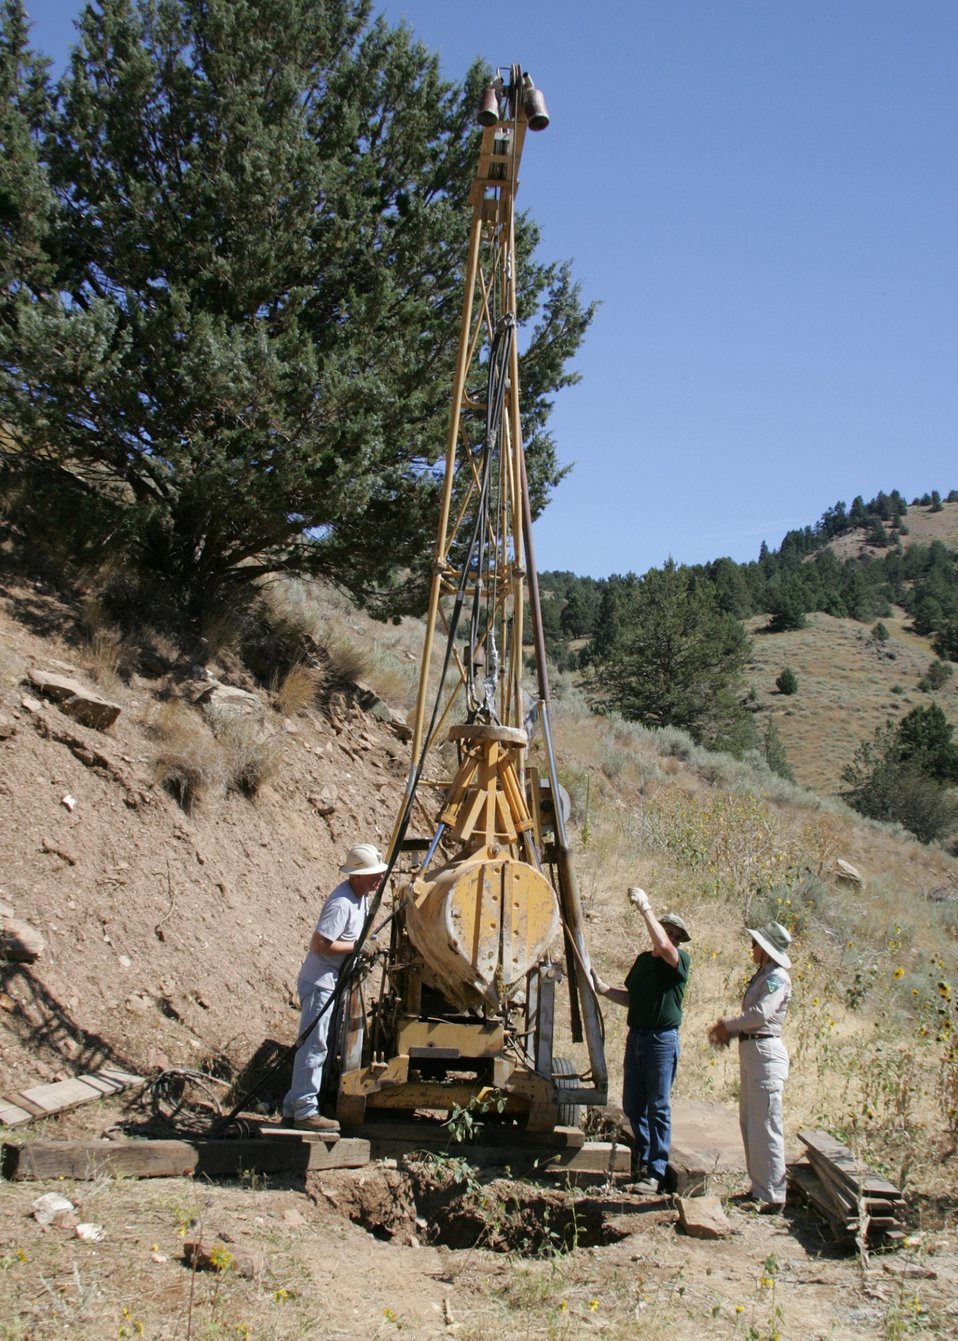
Kata Bulinski Baker City Field Office BLM Surface Protection Specialist talks with Ken and Dave Jeter at their historic Connor Creek Gold Mine in eastern Oregon.